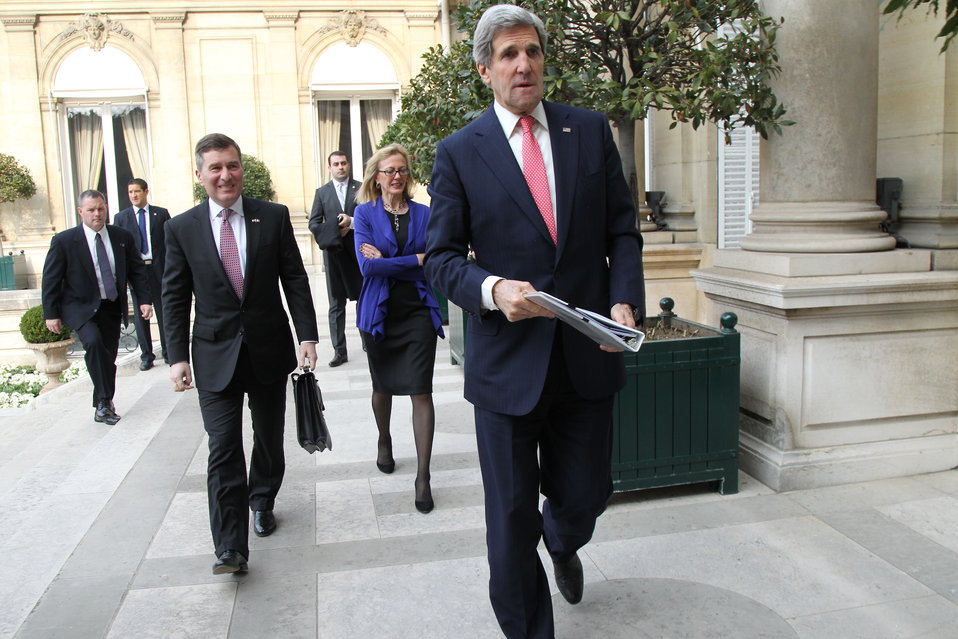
Secretary Kerry Arrives at the U.S. Ambassador to France Residence

U.S. Secretary of State John Kerry arrives at the U.S. Ambassador to France residence in Paris, France on March 27, 2013.